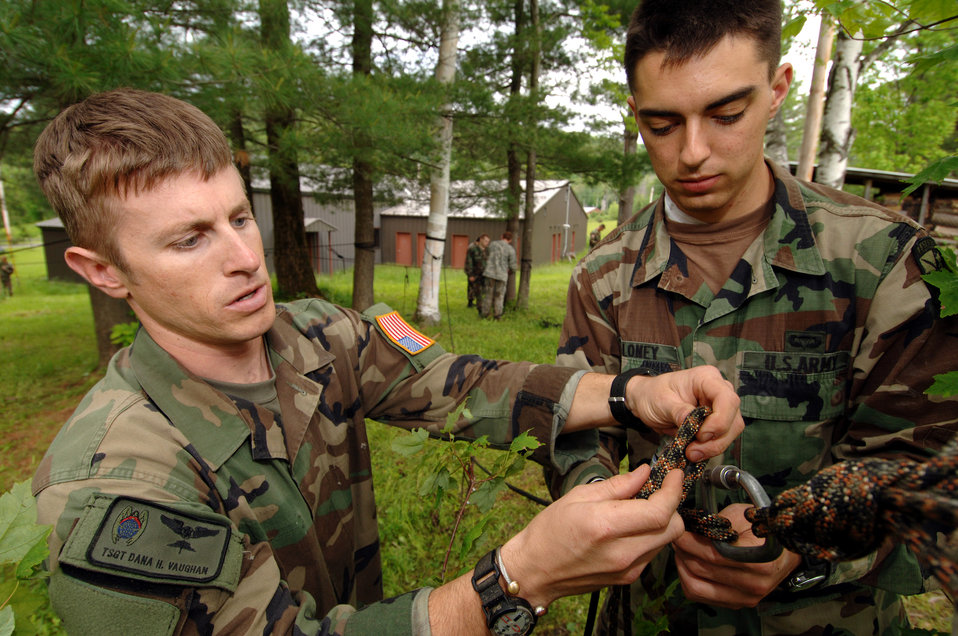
Joint training in Vermont mountains

Tech. Sgt. Dana Vaughan helps Army ROTC Cadet William Maloney construct a rope bridge on Thursday, June 8, 2006. Sergeant Vaughan, a pararescueman from Nellis Air Force Base, Nev., is attending a two-week summer mountaineer training course at the Vermont National Guard's Army Mountain Warfare School in Jericho, Vt.